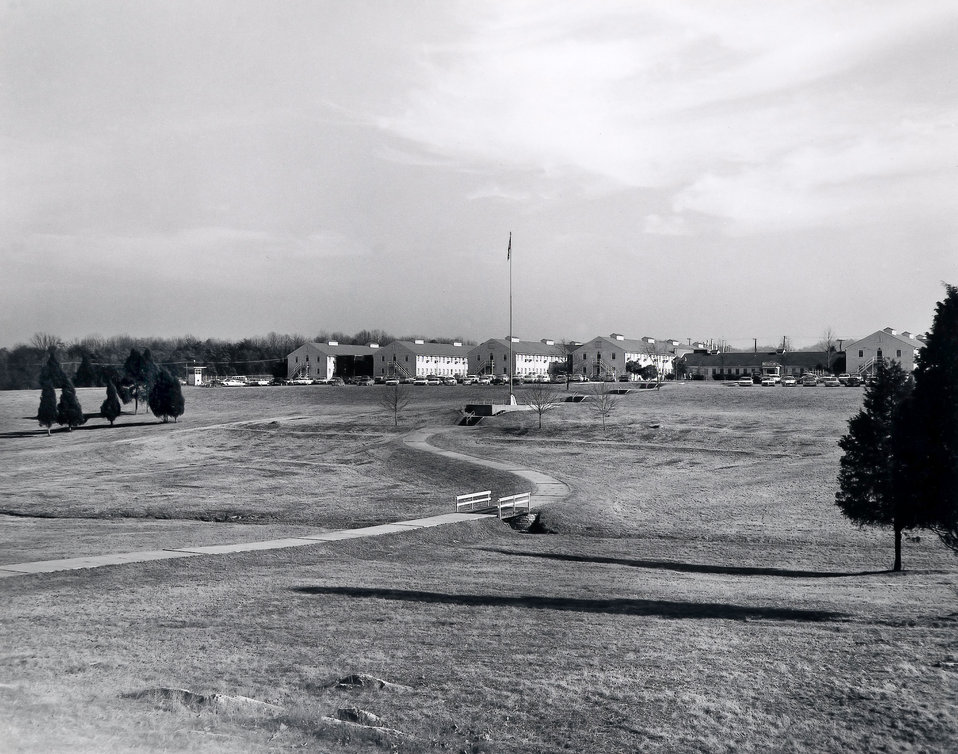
AEC Adm. Proposed Site for New Bldg. Oak Ridge

65-58 DOE photo by Ed Westcott 2-16-1965 Oak Ridge Tennessee